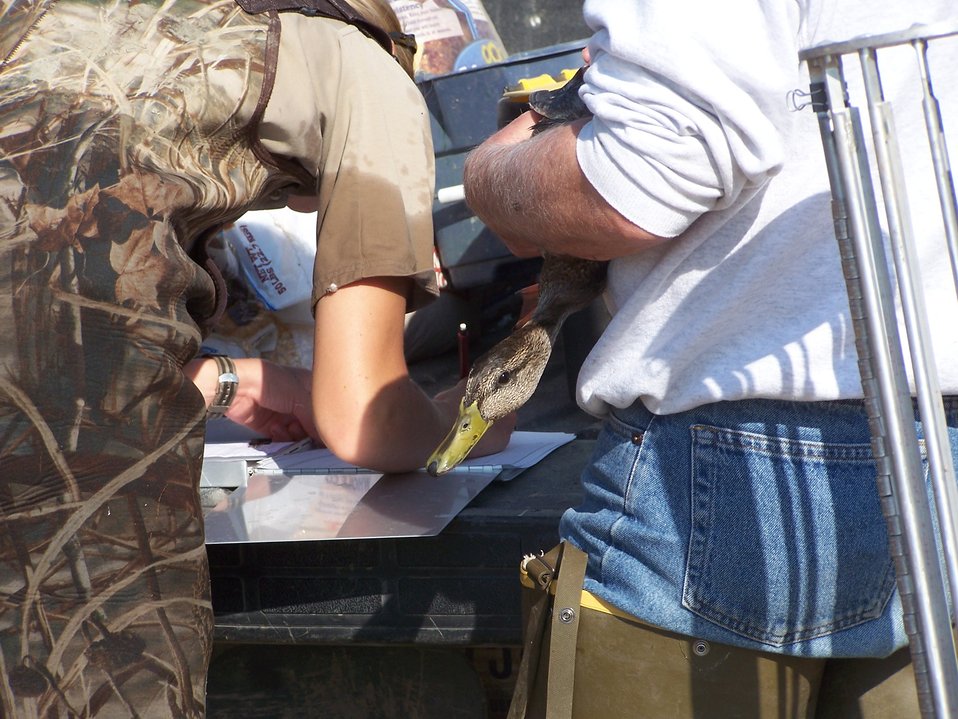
Banding a Juvenile Male Mallard

Banding waterfowl on Bowdoin NWR